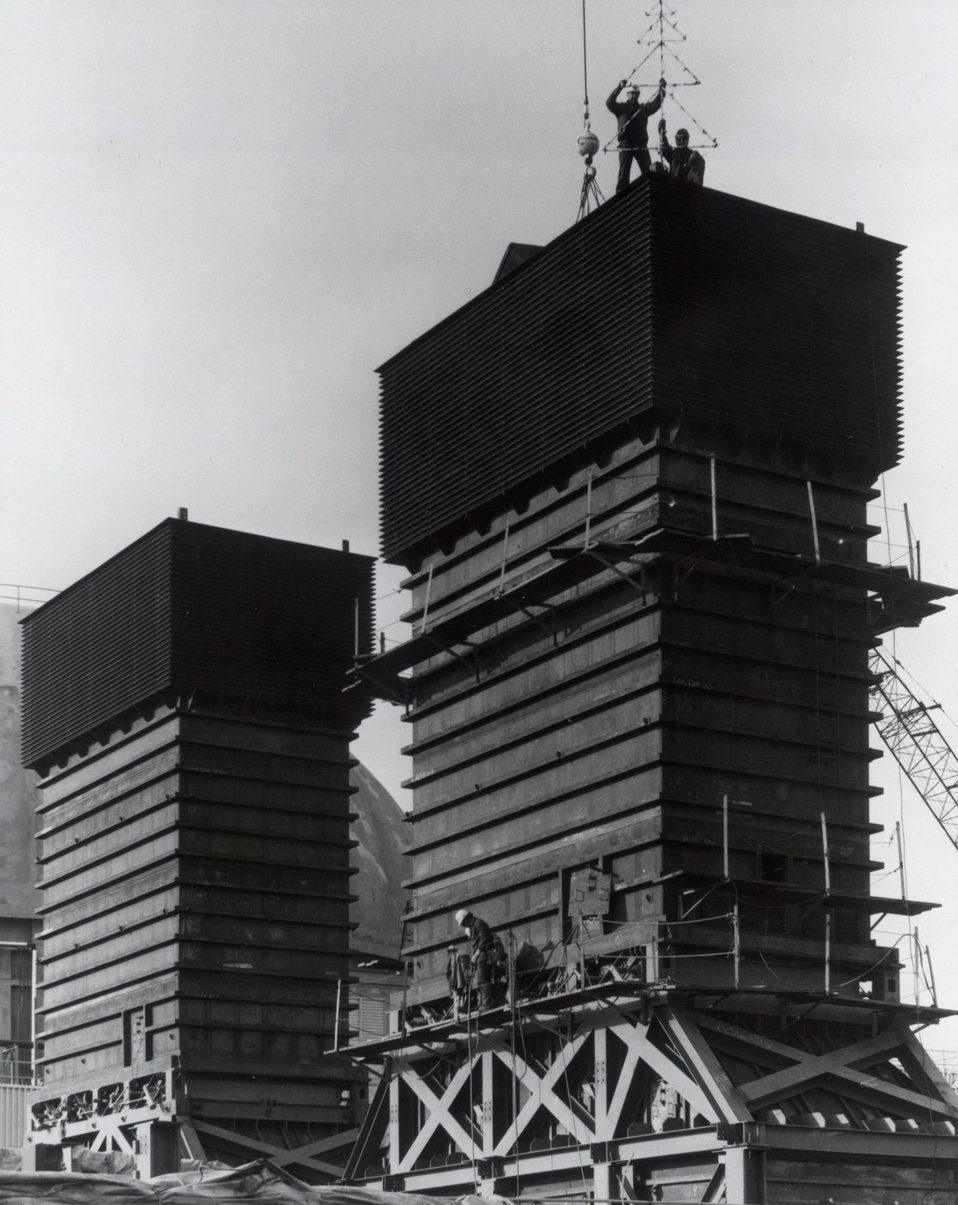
Construction activities at the Energy Research and Development Administration's Fast Flux Test Facility near Richland, Washington. Circa 1976.